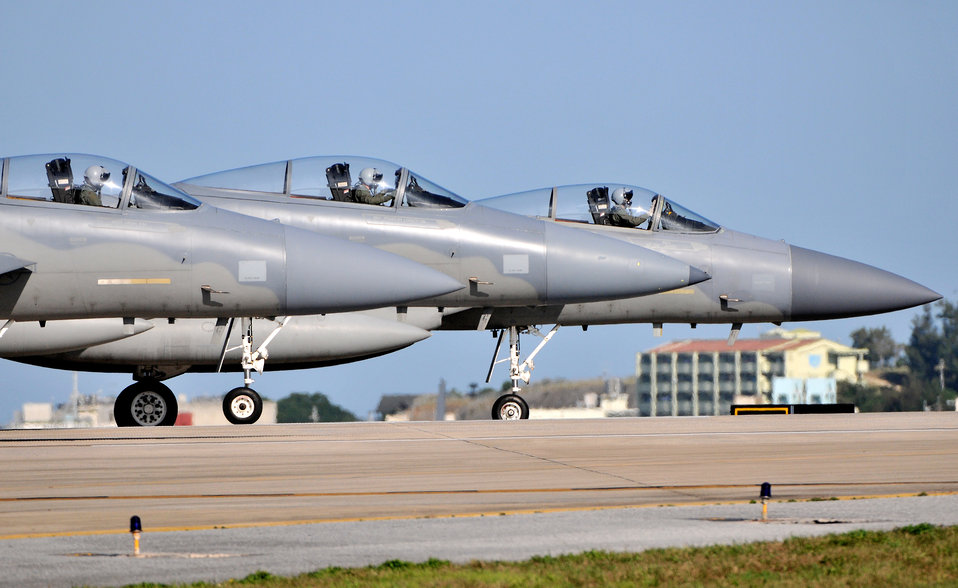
Joint Bilateral Training

Kadena pilots line up in preparation to take off for a training mission Feb. 23, 2010, at Kadena Air Base, Japan. Kadena Airmen were participating in joint bilateral training with other U.S. forces and the Japan Air Self Defense Force from Feb. 22 to 26.